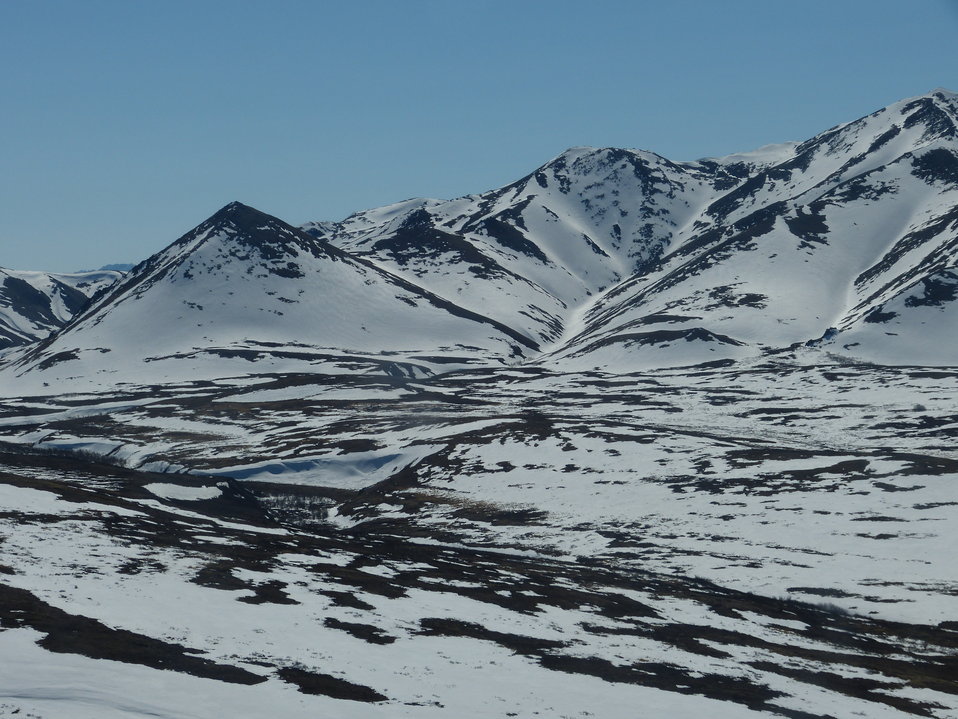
Kilbuck Mountains May2013 KSowl

Cliff-nesting raptor survey, Kilbuck Mountains, Yukon Delta National Wildlife Refuge

Photo credit: Kristine Sowl,
USFWS, YDNWR